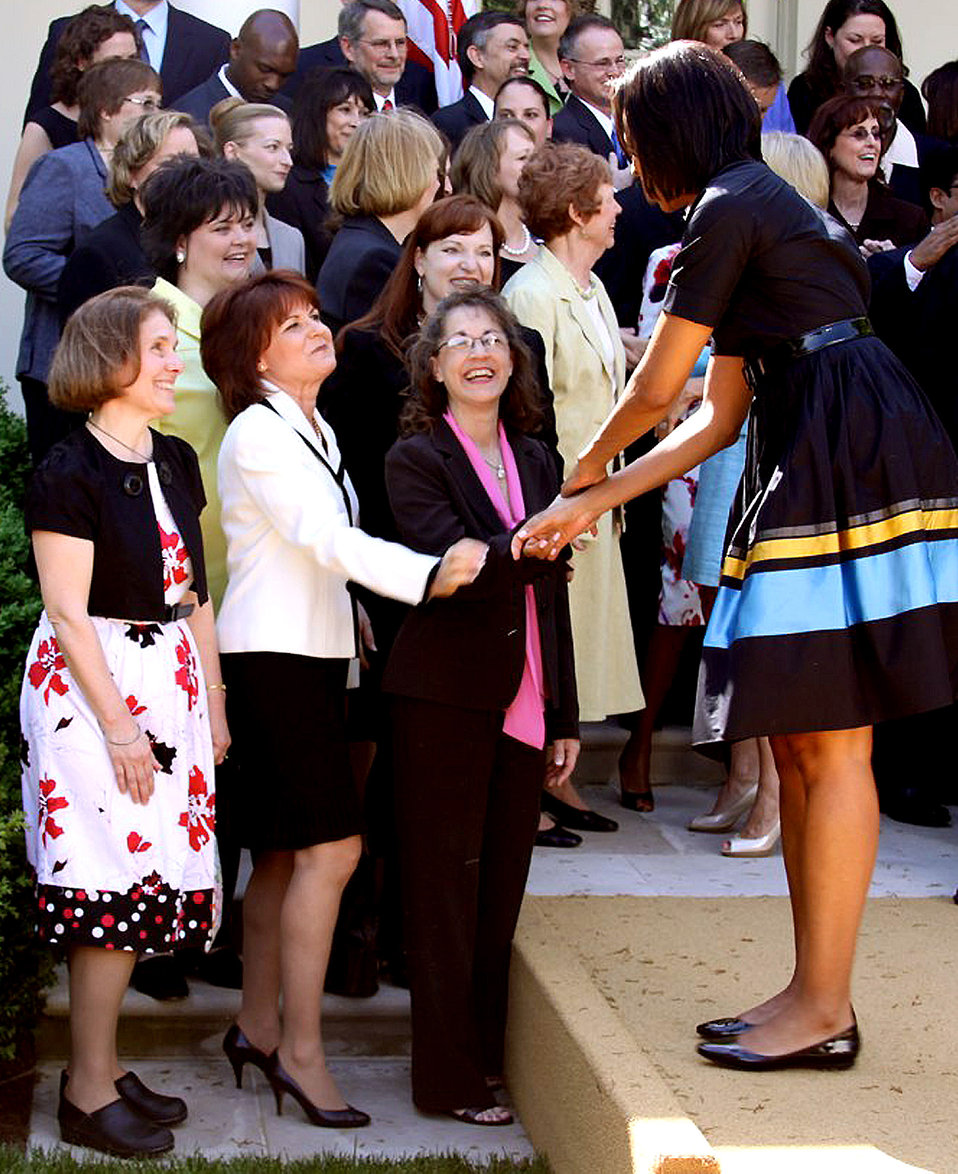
DOD teacher works to connect educators worldwide

Michelle Obama shakes hands with one of 55 teachers selected as their respective State Teacher of the Year. They had gathered in the White House Rose Garden for the ceremony announcing the National Teacher of the Year. Dorothy Goff Goulet, Deparment of Defense Education Activity's 2009 Teacher of the Year, second row on the right, awaits her turn to shake hads with the First Lady.